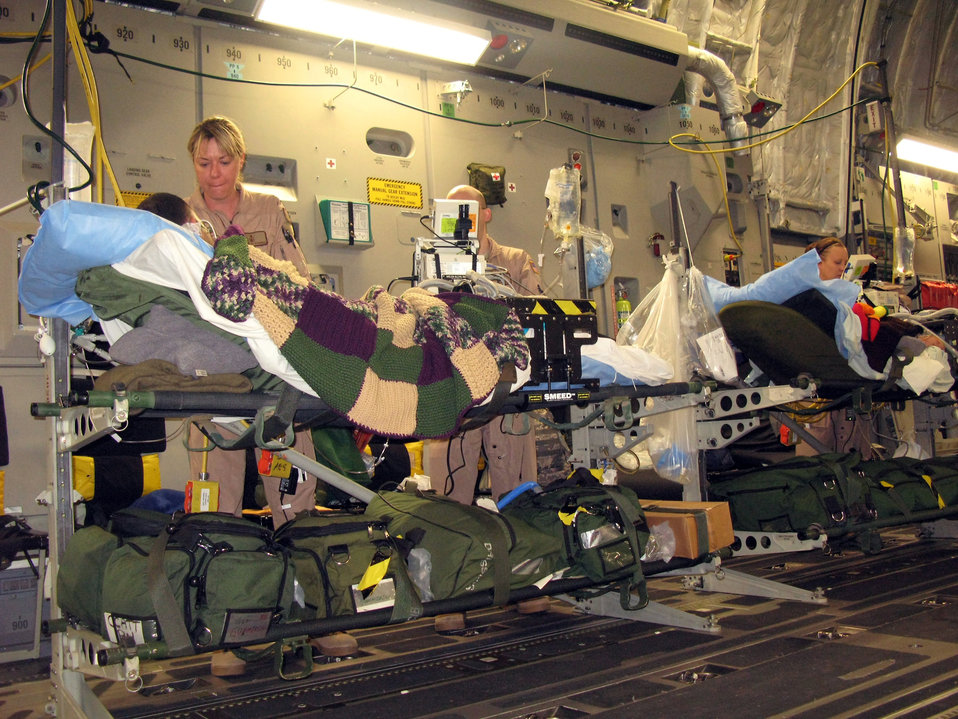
AE Afghanistan

Capt. Jackie Richards tends to a severely wounded warrior being evacuated April 29, 2011, from Bagram Airfield, Afghanistan. Captain Richards is a critical-care nurse.